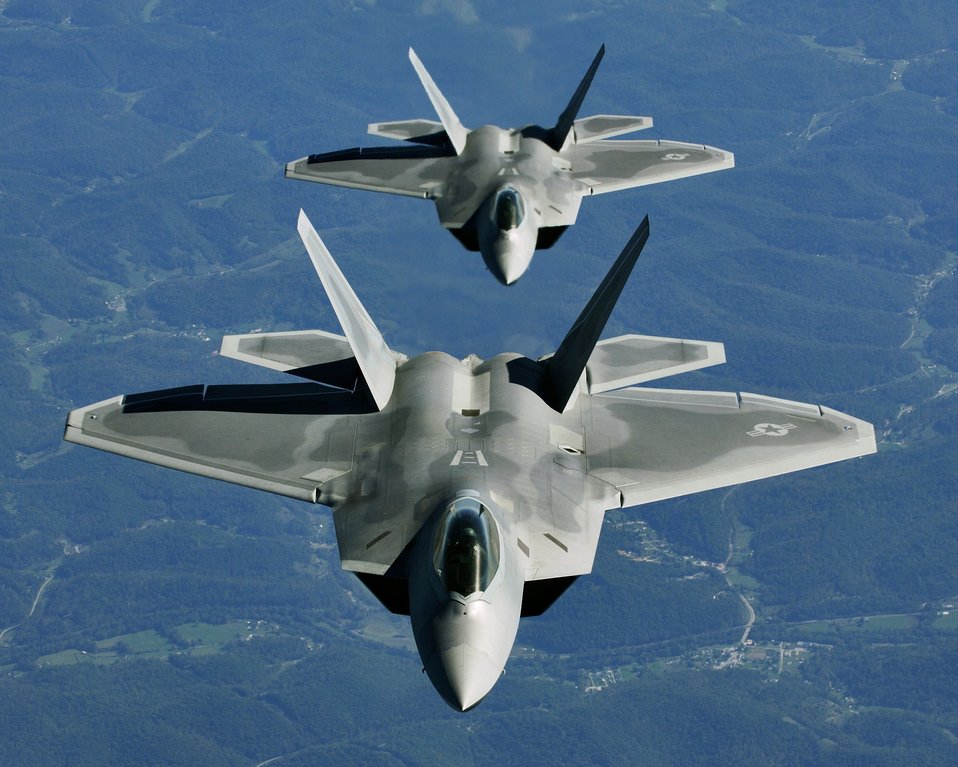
Combat Hammer

OVER THE MIDWEST -- Lt. Col. James Hecker (front) and Lt. Col. Evan Dertein line up their F/A-22 Raptor aircraft behind a KC-10 Extender to refuel while en route to Hill Air Force Base, Utah. Colonel Hecker commands the first operational Raptor squadron -- the 27th Fighter Squadron at Langley Air Force Base, Va. The unit went to Hill for operation Combat Hammer, the squadron's first deployment, Oct. 15. The deployment has a twofold goal: complete a deployment and to generate a combat-effective sortie rate away from home.